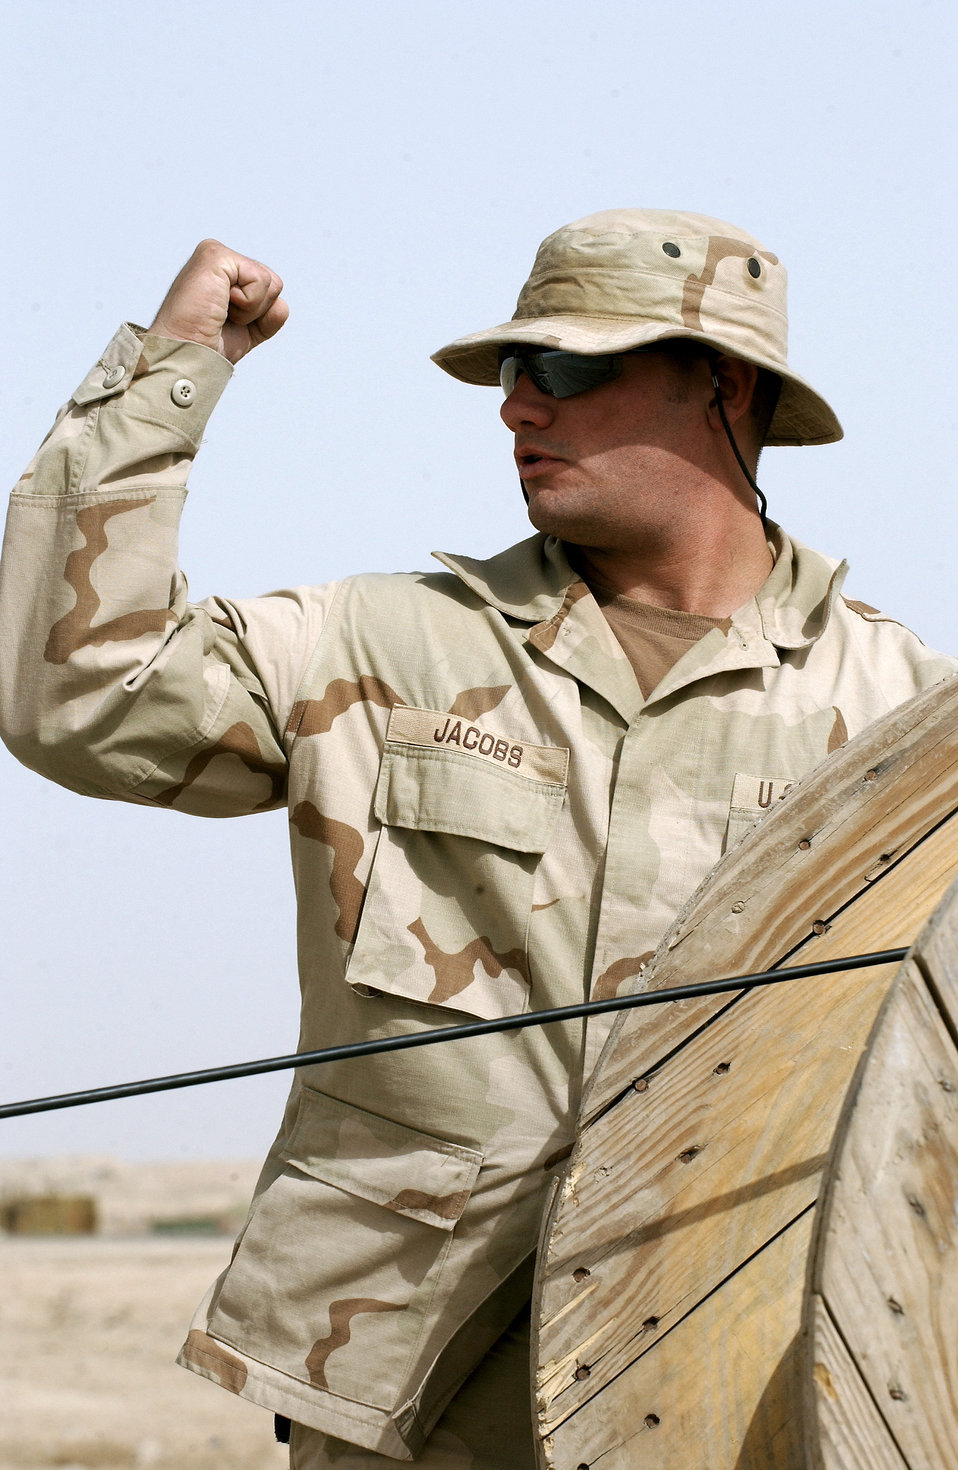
IRAQI FREEDOM

TALLIL AIR BASE, Iraq -- Senior Airman Joshua Jacobs signals his supervisor to stop pulling fiber from the reel to replace cable that was destroyed due to construction here. Airman Jacobs is deployed with the 407th Expeditionary Communications Squadron.